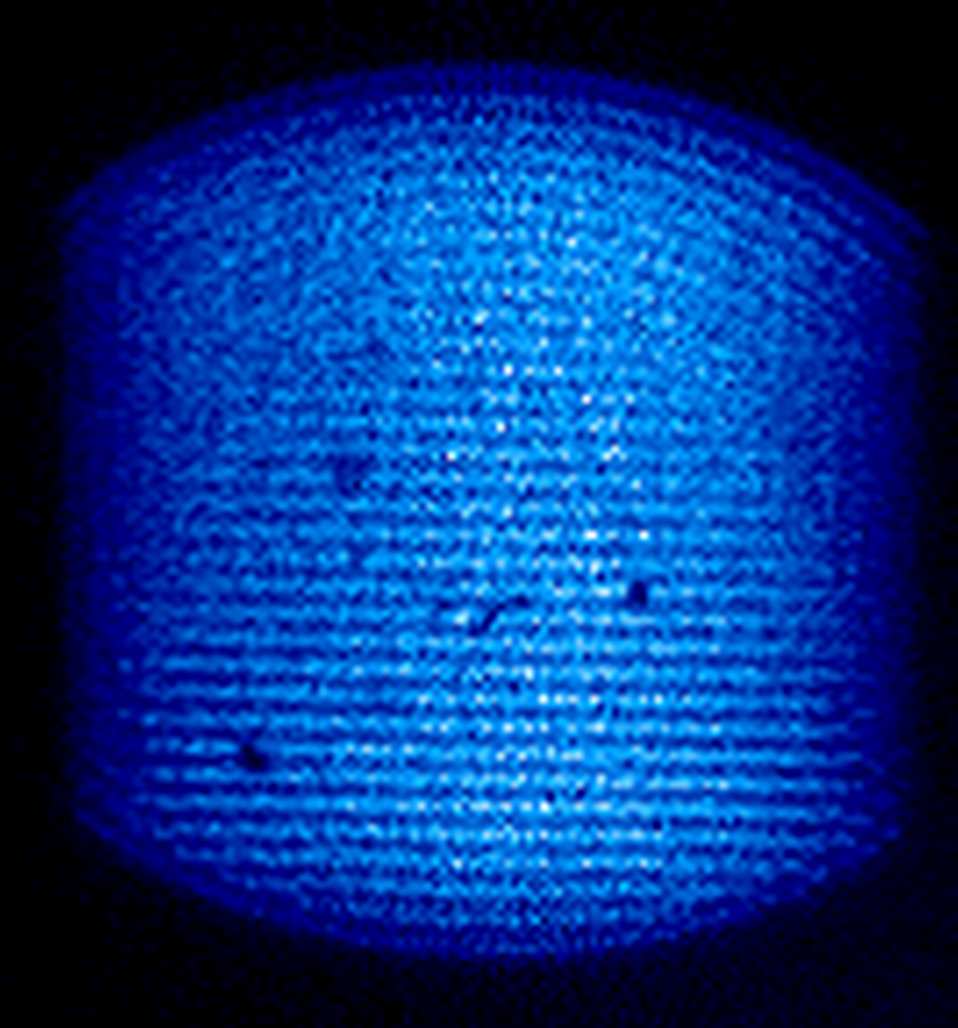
Ultracold Plasmas

This false color image shows an ultracold plasma of 26,000 beryllium ions fluorescing when hit by a laser pulse.